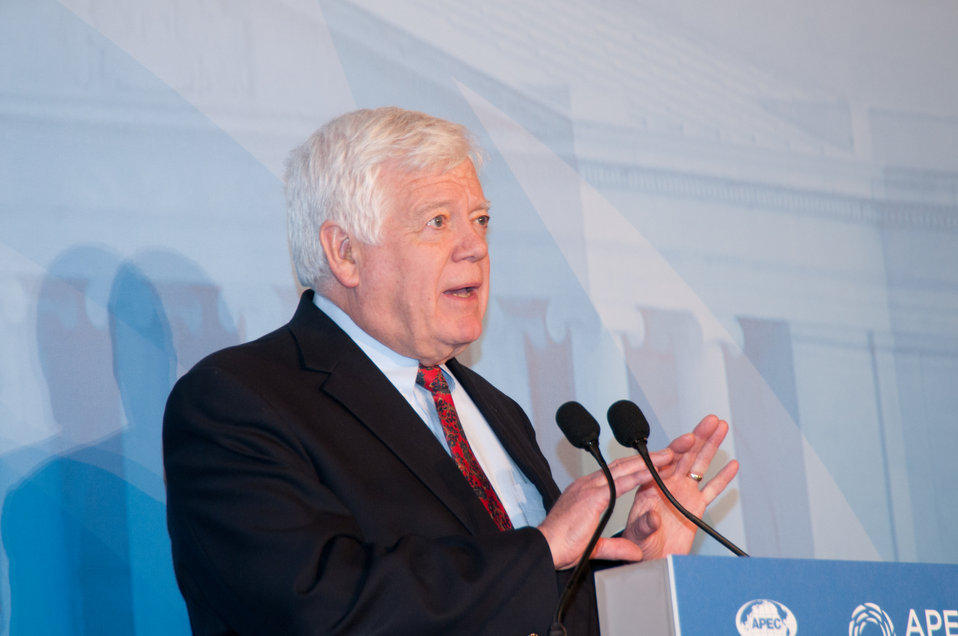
Congressman McDermott Speaks During Welcome Reception

Congressman Jim McDermott of Washington speaks at the First Senior Officials Meeting (SOM1) and Related Meetings of the APEC 2011 USA Host Year during the welcome reception at the Ronald Reagan Building in Washington, D.C., on March 9, 2011. [Fredde Lieberman photo]